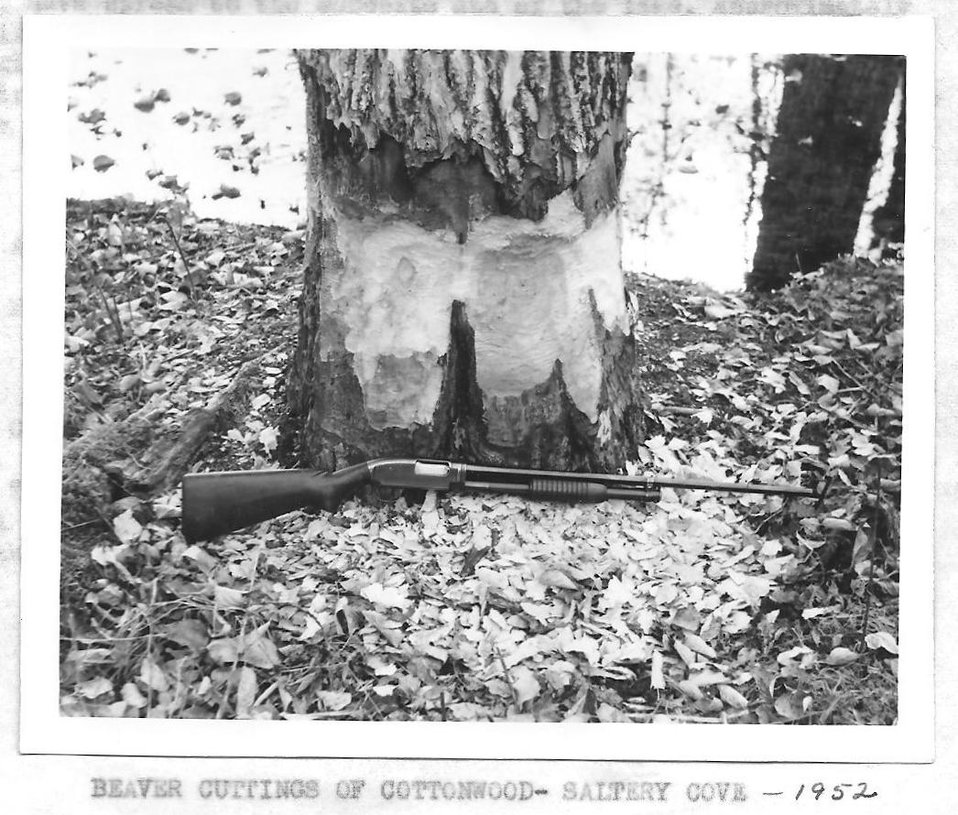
(1953) Beaver Cuttings of Cottonwood

Credit: USFWS

Source and Contact: Kodiak National Wildlife Refuge